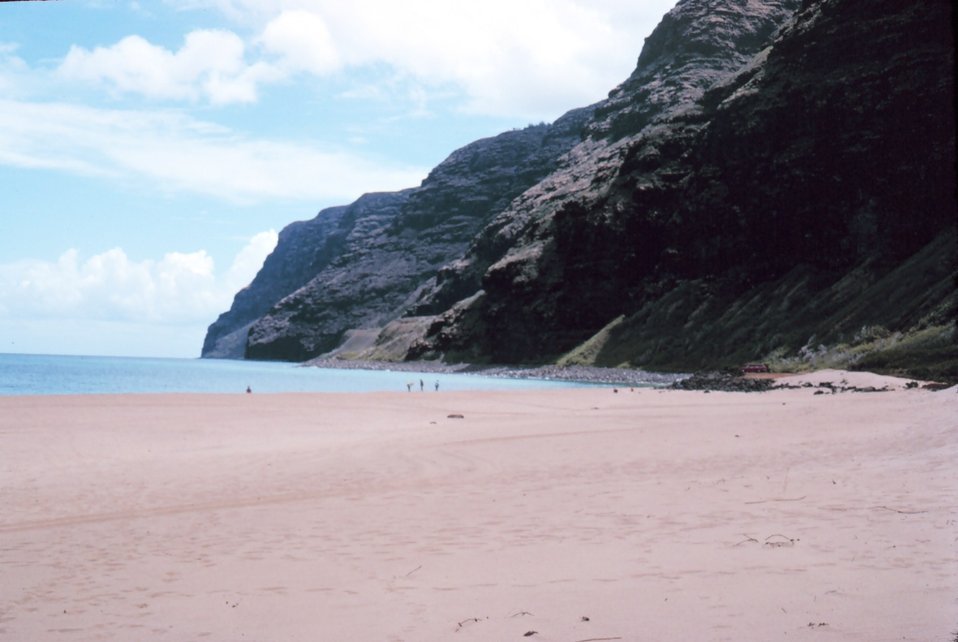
A beach on Kauai coast